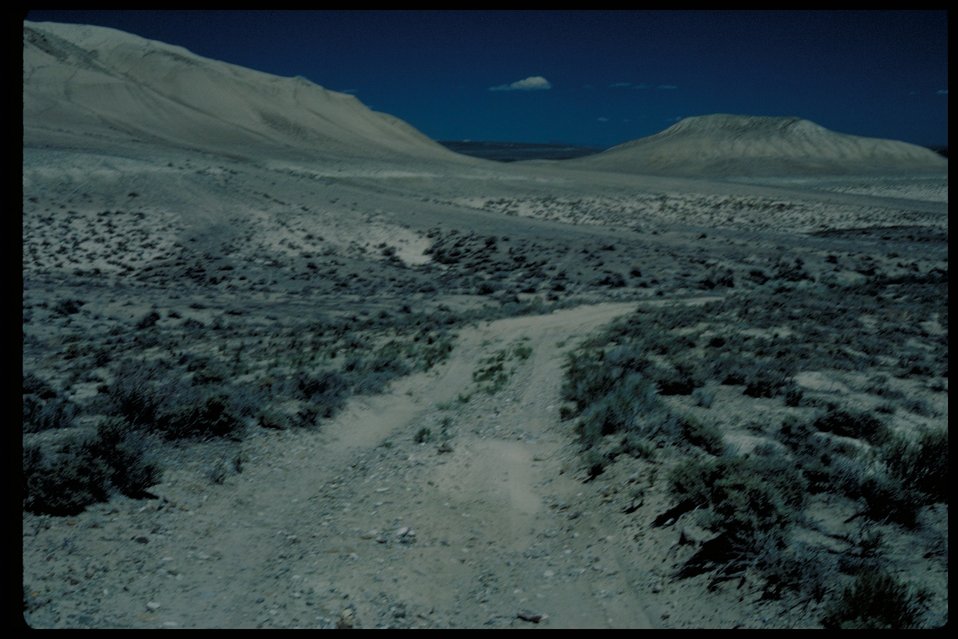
Oregon Trail west of Wildhorse Butte Lower Snake River District